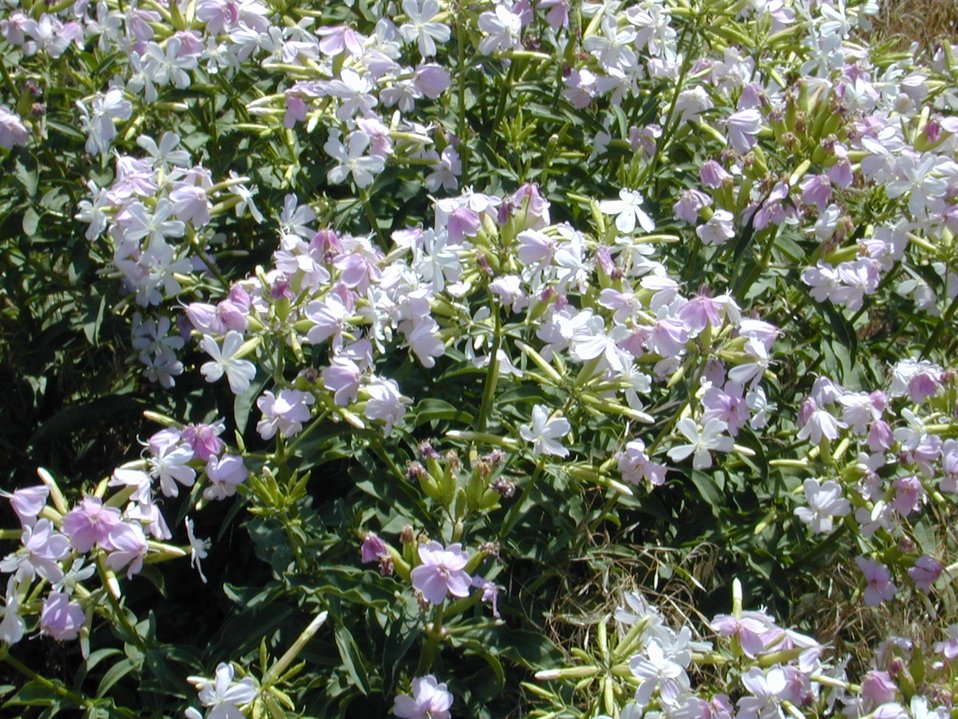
Phlox Cottonwood Field Office UCSC Upper Columbia Salmon Clearwater District